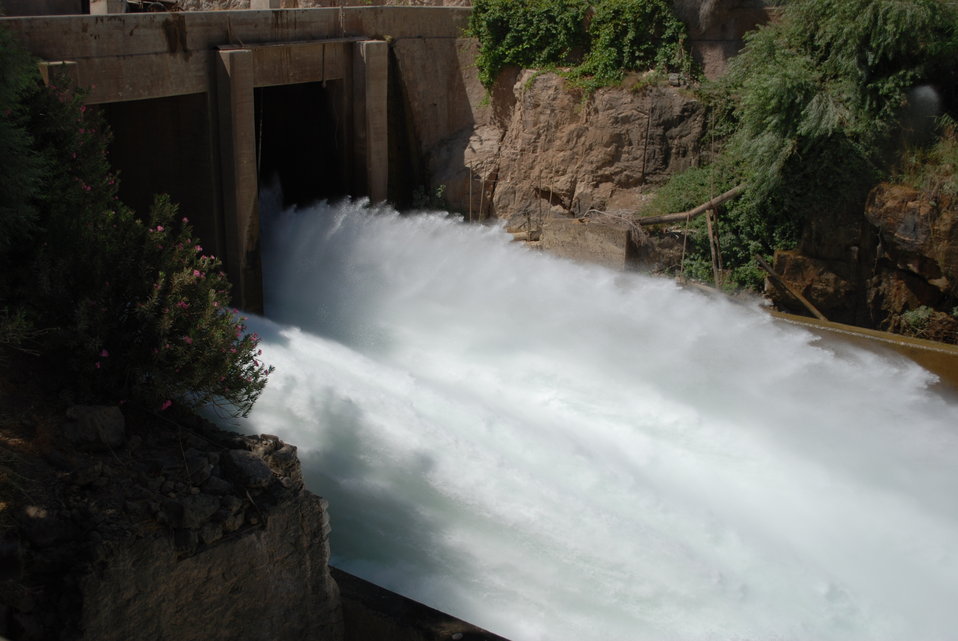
'On the Road' in Kandahar